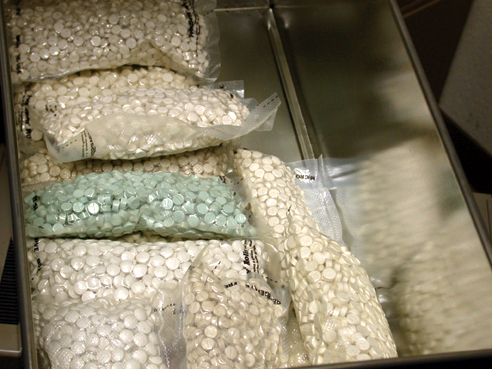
Drug bust

MOODY AIR FORCE BASE, Ga. -- Search teams uncovered more than 16,000 Ecstasy pills and $50,000 in cash belonging to Senior Airman Fredenburg stationed here. Agents also seized three motor vehicles and a motorcycle, and they uncovered evidence that indicated he had tens of thousands of dollars in numerous investment accounts.